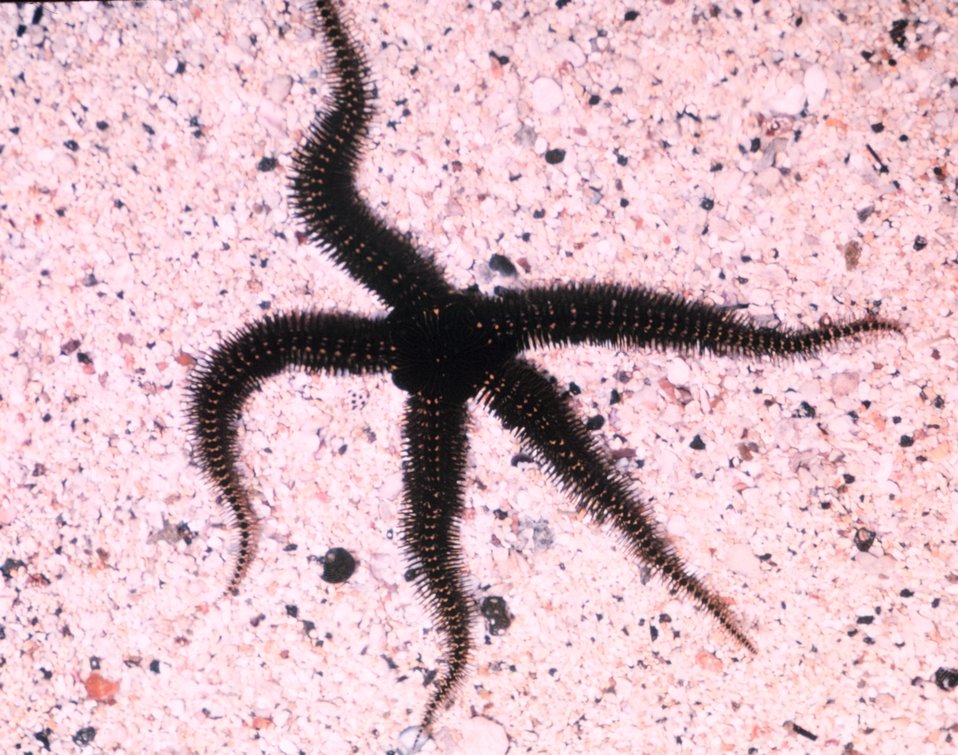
A brittlestar.